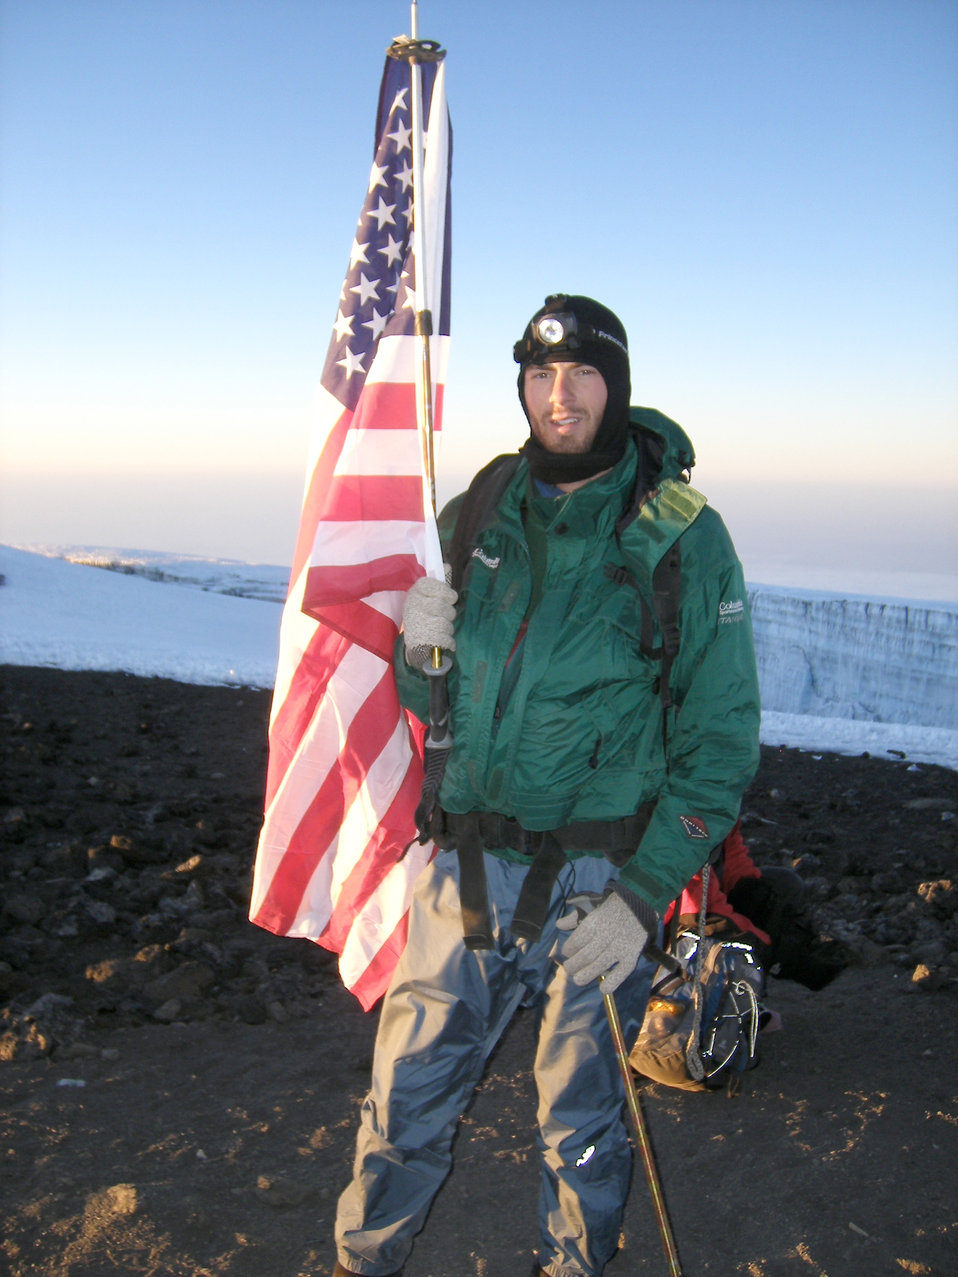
Airmen prepare for Antarctic climb

Capt. Graydon Muller poses at the summit of Mt. Kilimanjaro, the highest peak in Africa, as part of the U.S. Air Force Seven Summits Challenge in July 2006. The U.S. Air Force Seven Summits Challenge is an endeavor for Air Force members to carry the Air Force flag to the highest point on each continent and to be the first U.S. military group to conquer all seven peaks. Captain Muller and Capt. Rob Marshall will depart Nov. 24, 2010 to attempt the group's fifth summit, Vinson Massif in Antarctica. Captain Muller is a member of the 6th Special Operations Squadron at Hurlburt Field, Fla. Captain Marshall is a member of the 8th SOS.